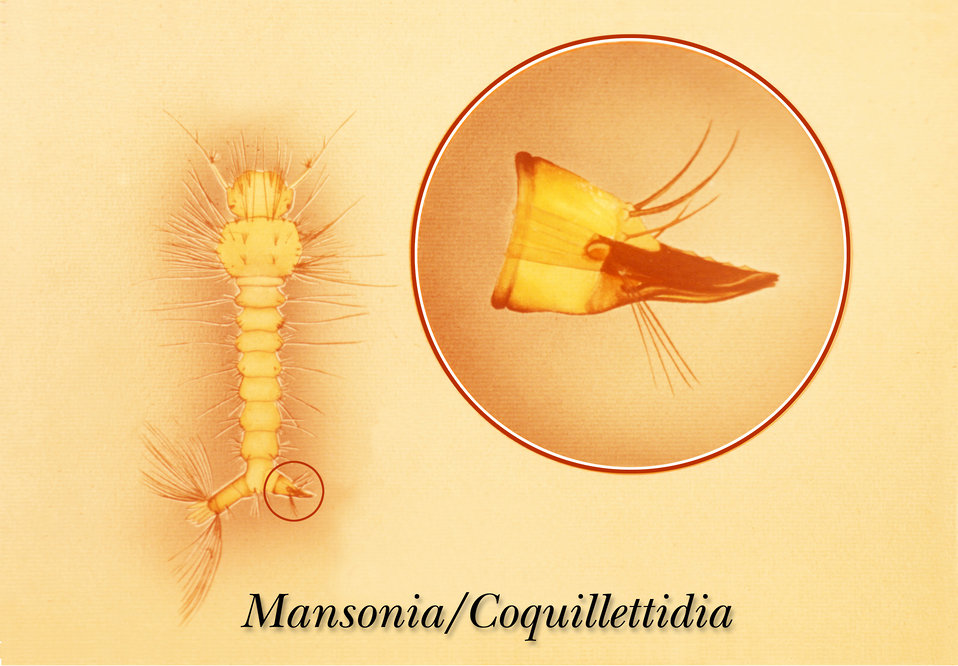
Drawing of Mansonia or Coquillettidia mosquito larvae with siphon, or air tube.